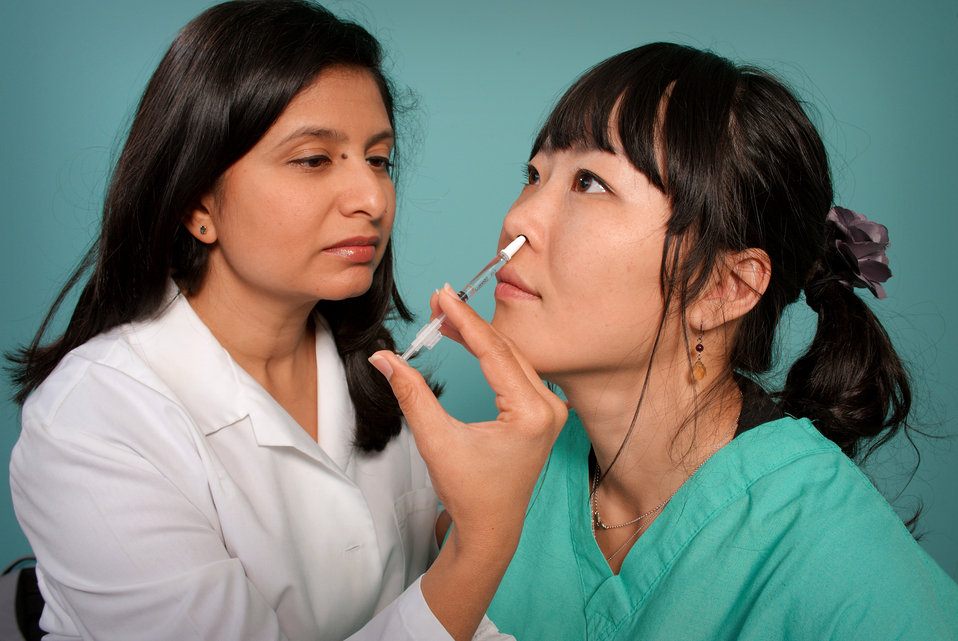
H1N1 vaccine

This 2009 image depicts a healthcare practitioner as she was administering the H1N1 live attenuated intranasal vaccine (LAIV) to an Asian woman. Using a small syringe, she was delivering the vaccine mist into the woman's left nostril.